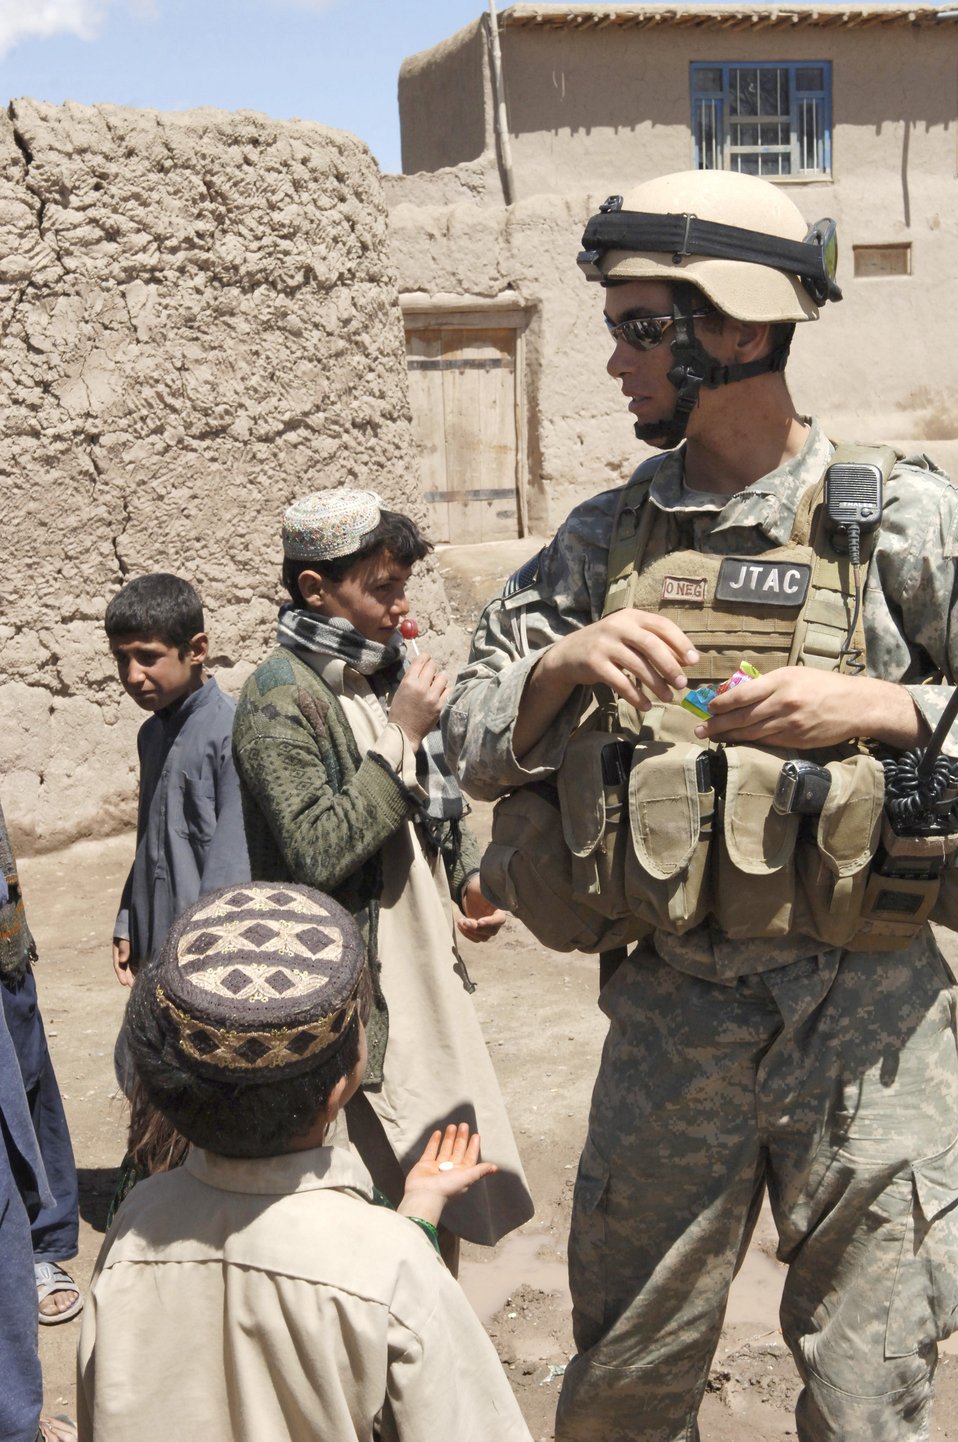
Would you like some candy

Air Force Staff Sgt. Jeff Havens gives candy to children in the village of Makawa, Afghanistan, on Saturday, April 15, 2006. Sergeant Havens is a joint terminal attack controller attached to Alpha Company, 3rd Brigade Special Troops Battalion, 10th Mountain Division.